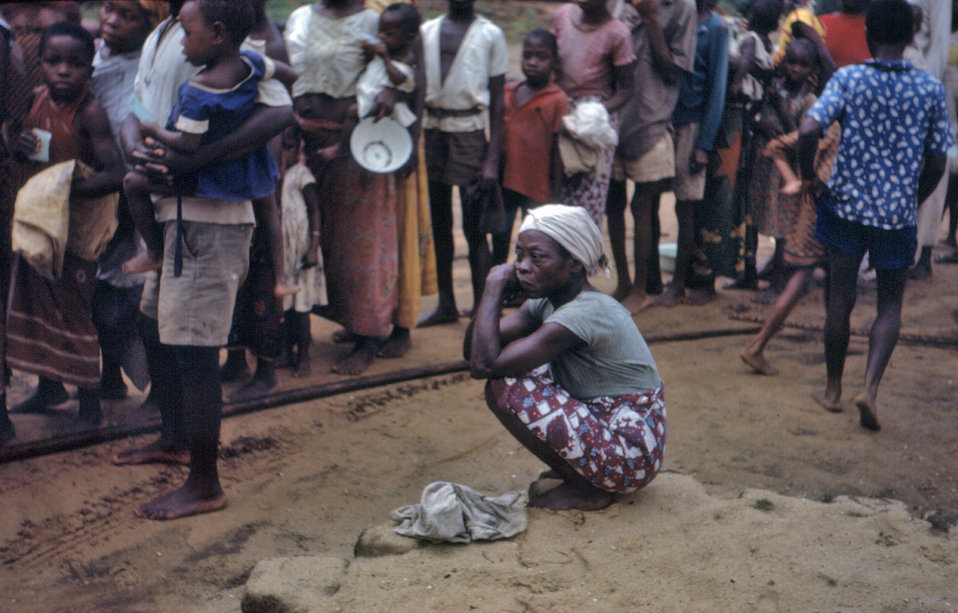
This 1968 photograph depicted a food distribution line for refugees of the Nigerian-Biafran civil war. Those in line had brought sacs into which was placed quantities of food based on each refugee's nutritional status, the determination of which was made through assessed criteria elsewhere in the camp.